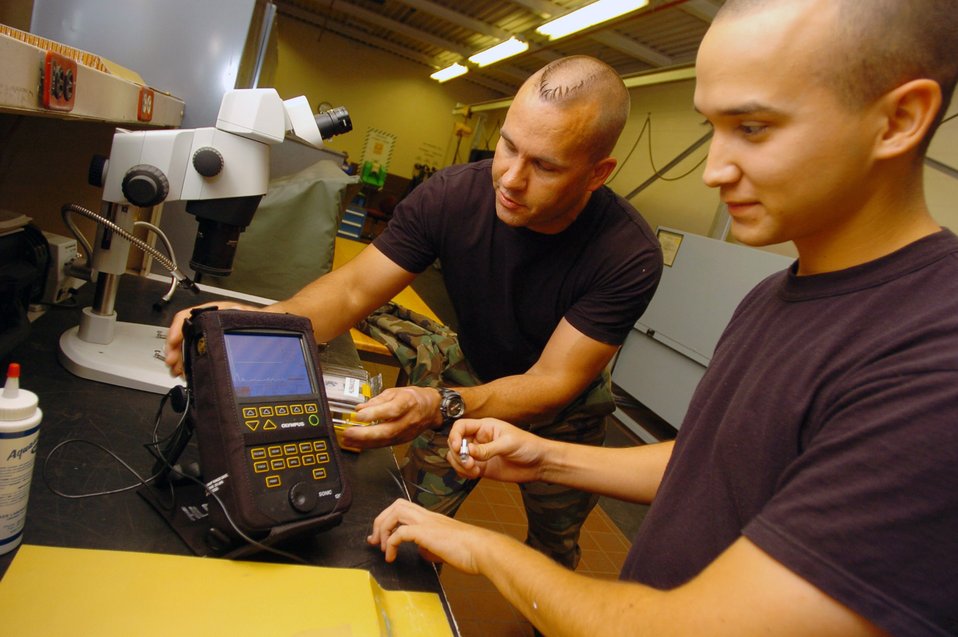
Fab flight craftsmanship reaches entire base

Airman 1st Class James Watts and Tech. Sgt. Stan Rothfuss inspect an airplane part for cracks and damage at Hickam Air Force Base, Hawaii. They are using sonogram technology to detect damage to the composite material that makes up a C-17 Globemaster III. Airman Watts is nondestructive inspection lab inspector at the 15th Maintenance Squadron, and Sergeant Rothfuss is a reservist from McChord Air Force Base, Wash.